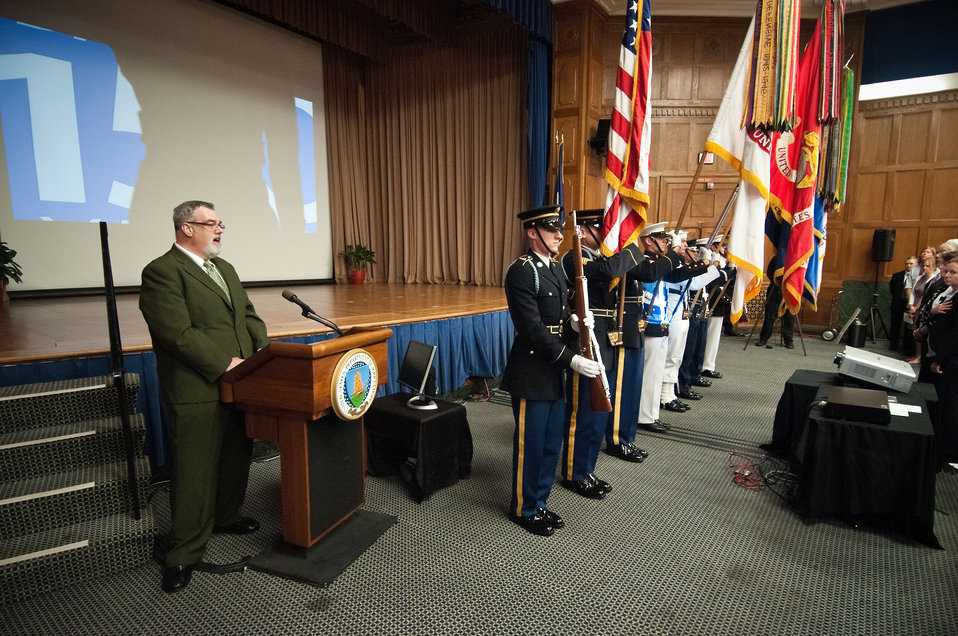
Perry Stevens, United States Department of Agriculture Lesbian, Gay, Bisexual and Transgender Special Emphasis Program Manager sings the National Anthem in the presence of the Joint Armed Forces Color Guard Military District of Washington, D.C., at the LGBT Pride Observance, “The Sum of Us: Lesbian, Gay, Bisexual and Transgender Pioneers” at the United States Department of Agriculture in Washington, D.C., Thursday, June 7, 2012.